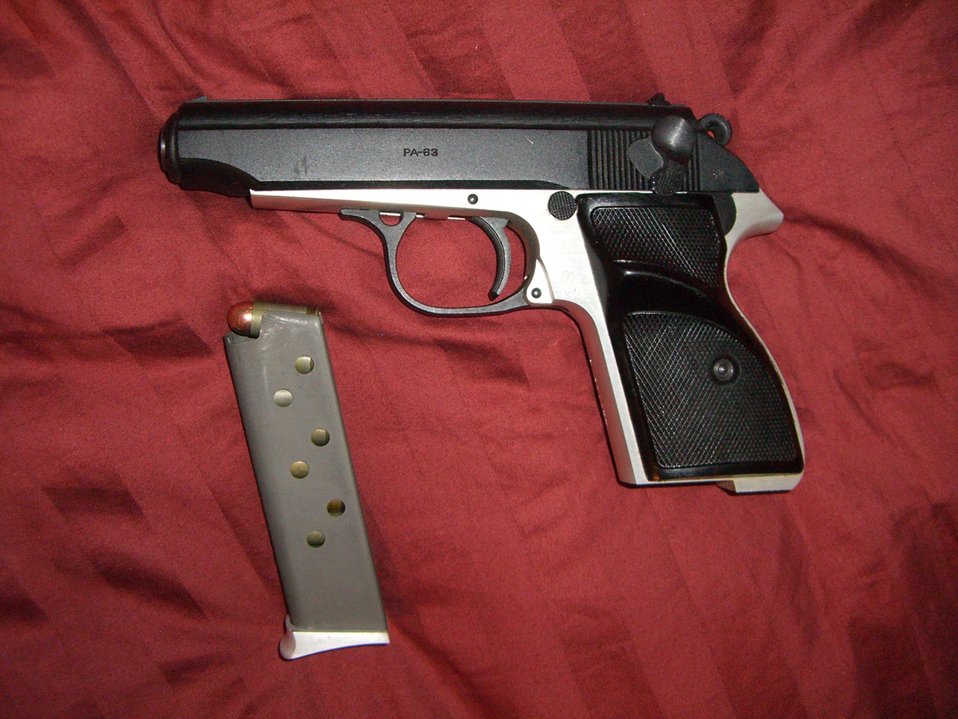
PA-63 pistol with Clip